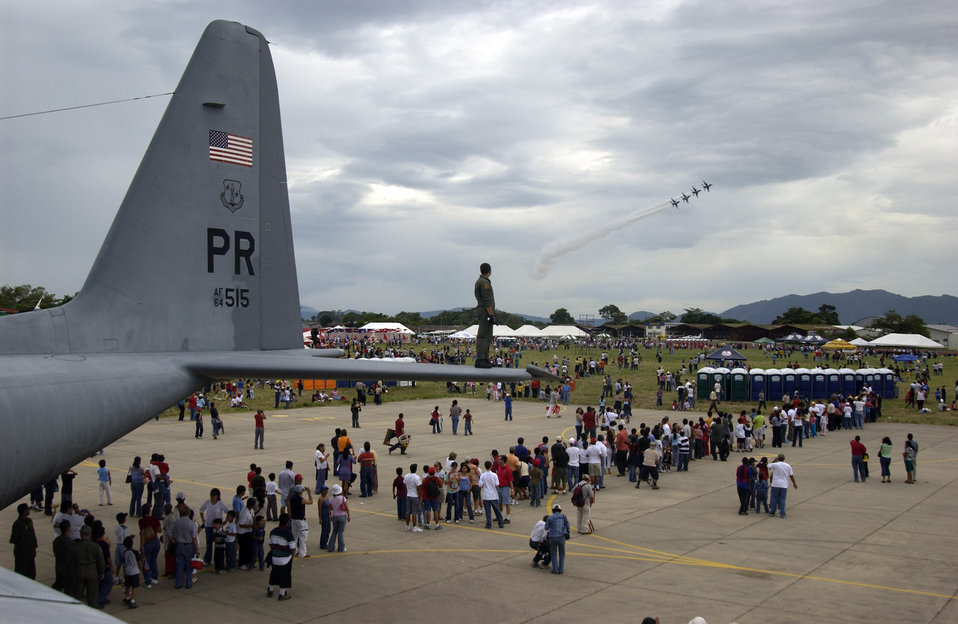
Airmen bring Airpower to San Salvador

ILOPANGO AIR BASE, El Salvador (AFPN) -- Senior Airman Jean Audiffred, a Puerto Rican Air National Guard C-130 crew chief, observes the Thunderbirds from the tail of his C-130 Hercules during the Ilopango Air Show 2005 in El Salvador. The C-130 was the only U.S. aircraft opened to the public during the Oct. 30 show.